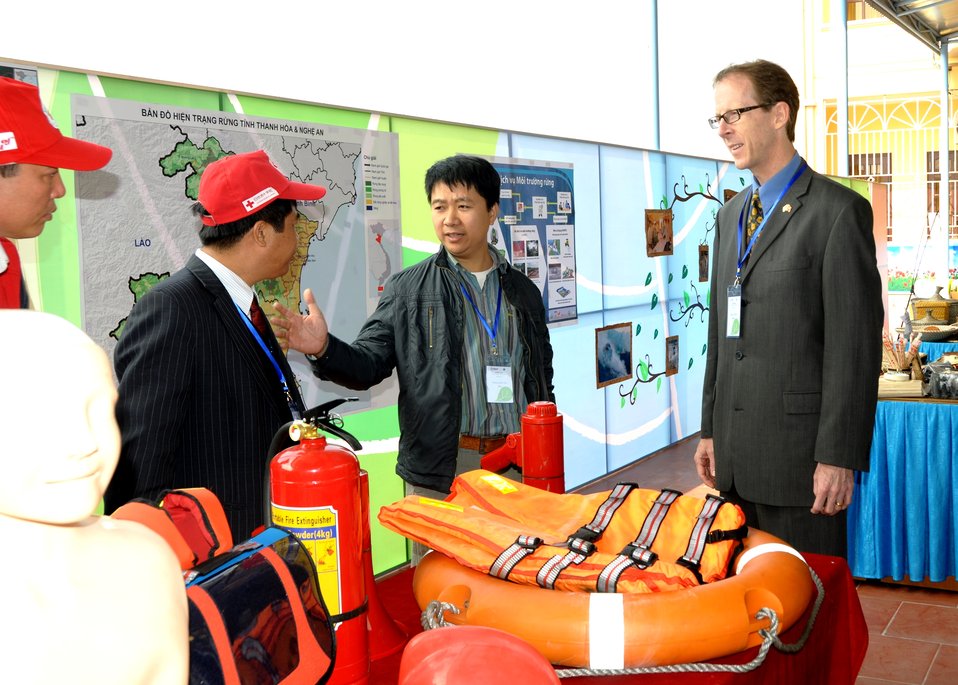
USAID launches the Vietnam Forests and Deltas project in Nam Dinh province.

Quat Lam, Nam Dinh. January 16, 2014.